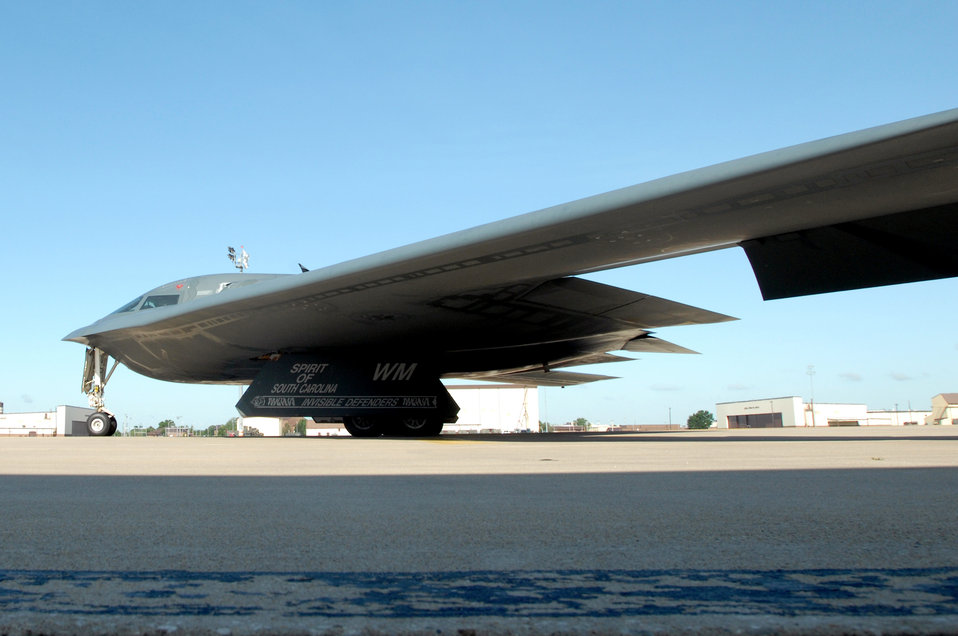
Ready for takeoff

A B-2 Spirit taxis down the flightline at Whiteman Air Force Base, Mo., Aug. 22. Twenty B-2 bombers are assigned to the 509th Bomb Wing. The B-2 brings massive firepower to bear, in a short time, anywhere on the globe through previously impenetrable defenses.